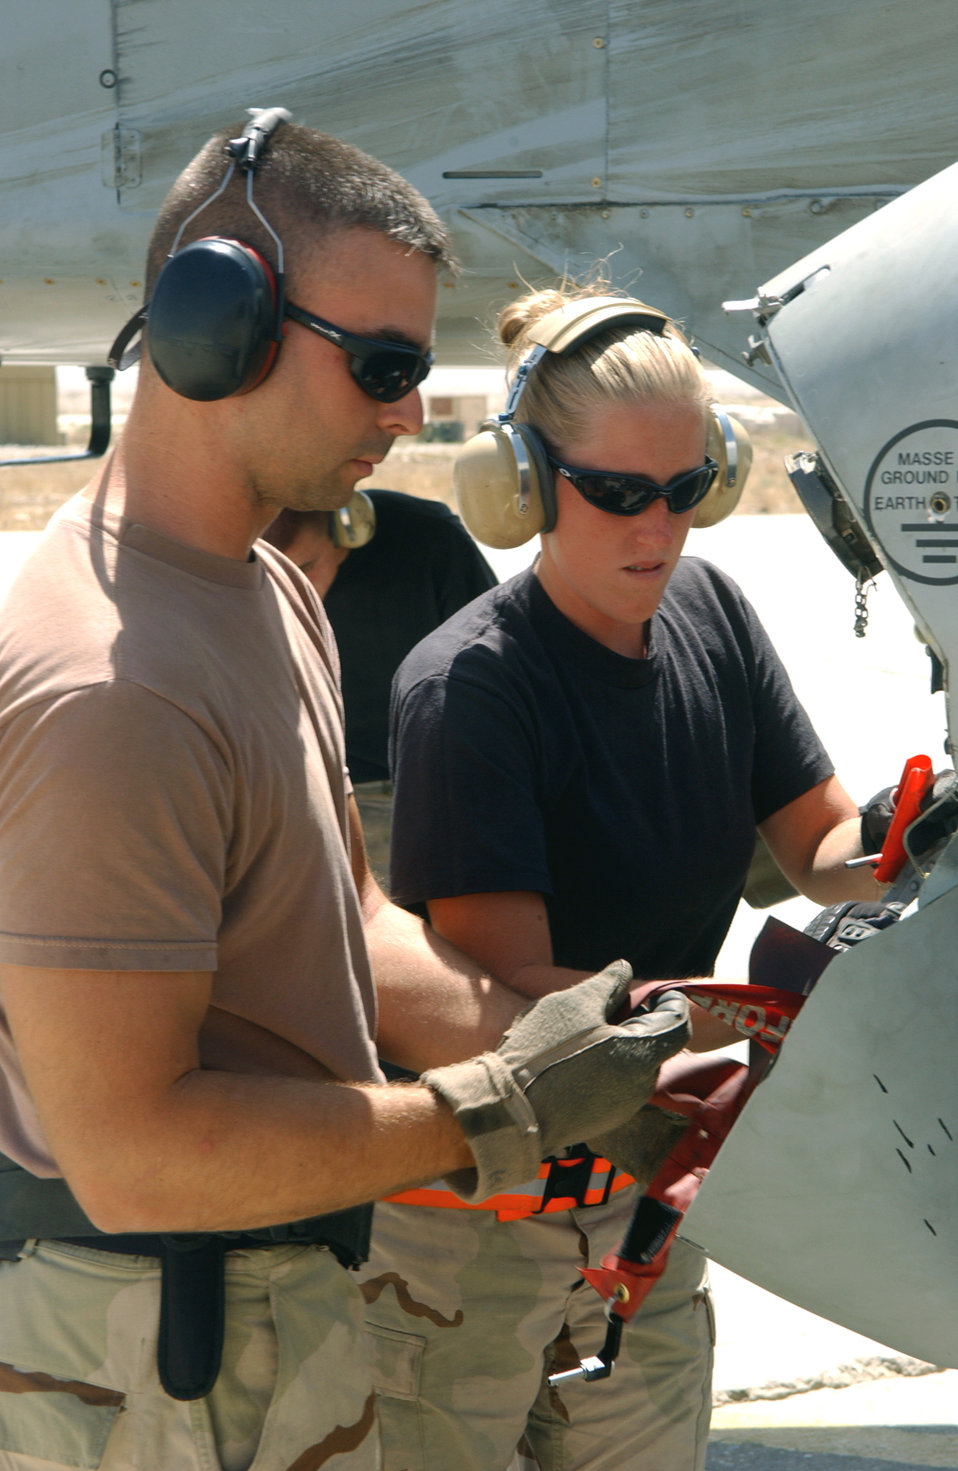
Warthog bite

BAGRAM AIR BASE, Afghanistan -- Staff Sgt. Nathaniel Kibodeaux (left) and Airman 1st Class Stacy Wilson remove weapons pins from an A-10 Thunderbolt II storage compartment. They are assigned to the 354th Expeditionary Aircraft Maintenance Squadron.